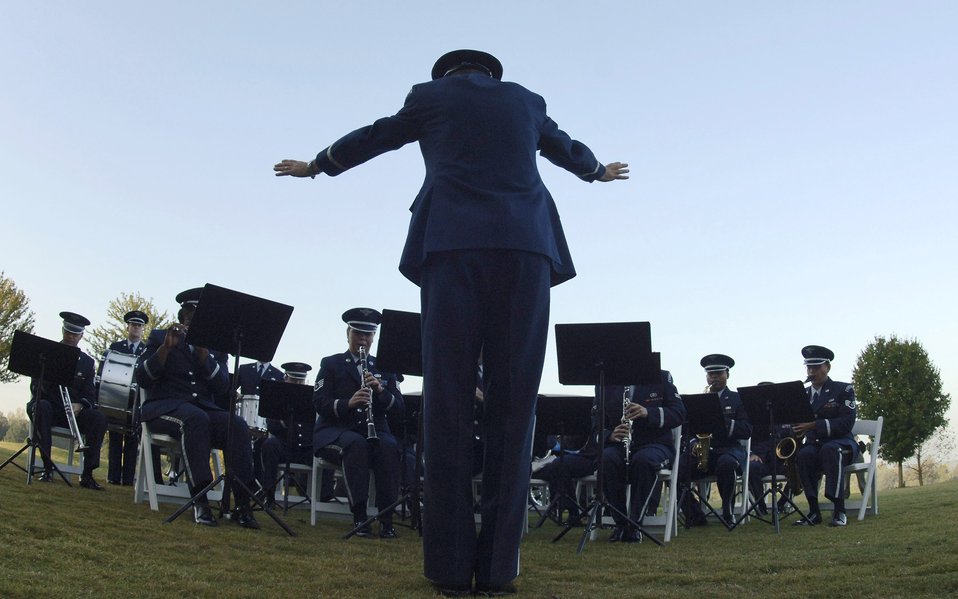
‘O say, can you see…?’

The Band of the Air Force Reserve plays the national anthem during a proclamation ceremony Oct. 8 in Marietta, Ga., to kick off Air Force Week Atlanta. Programs during the week are meant to increase the awareness and support of the public for the Air Force's diverse capabilities and the sacrifices of its Airmen.